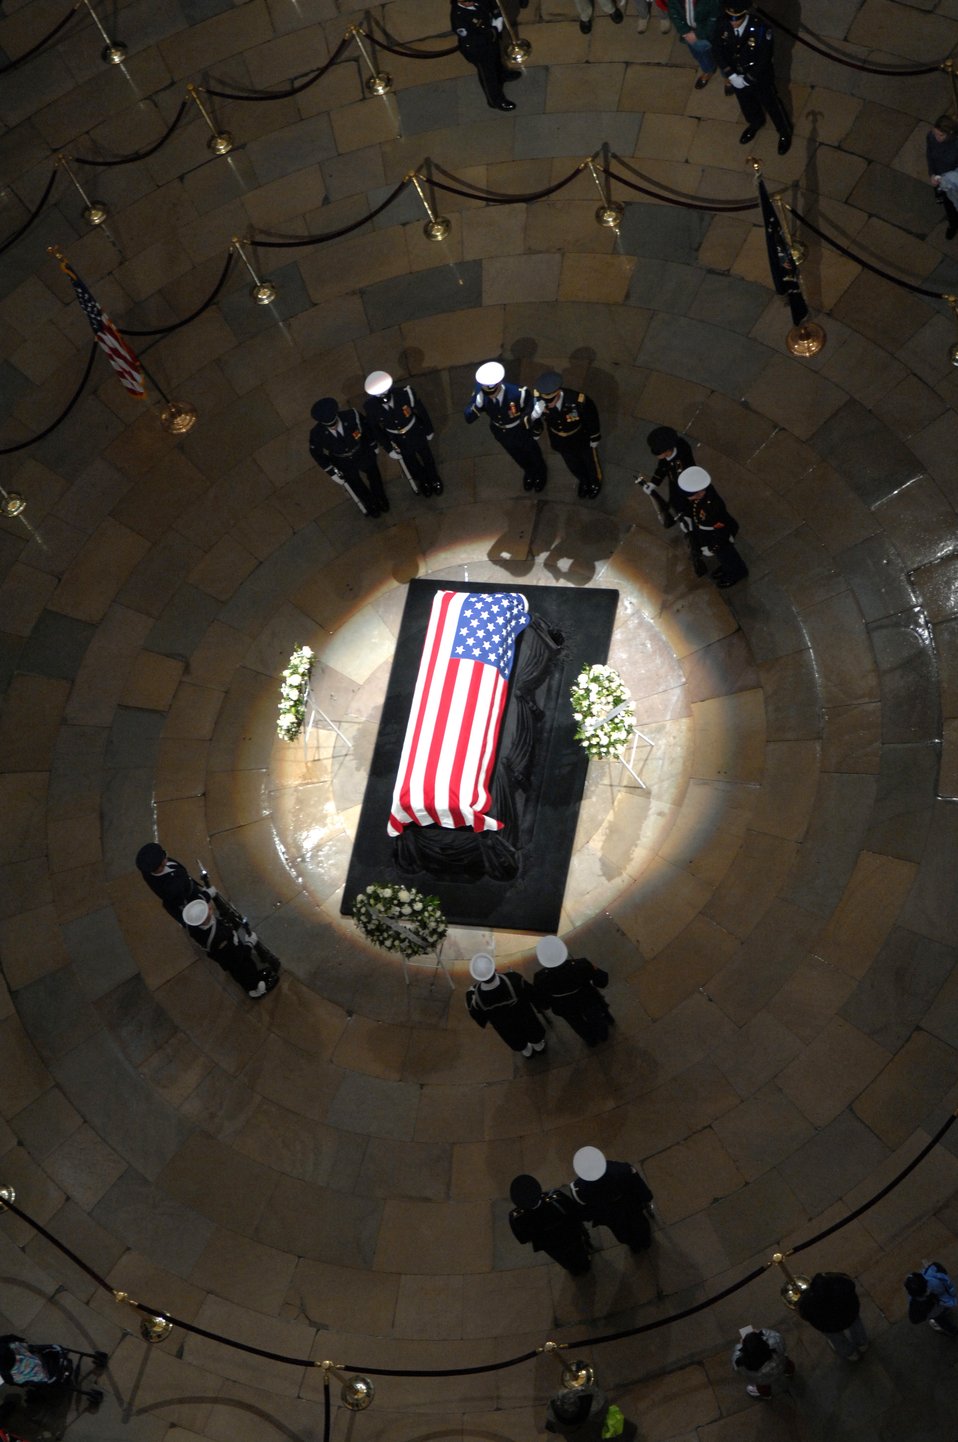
With honors

Armed Forces Honor Guard members watch over the casket of former President Gerald R. Ford as it lies in the U.S. Capitol rotunda Jan. 1 in Washington, D.C.